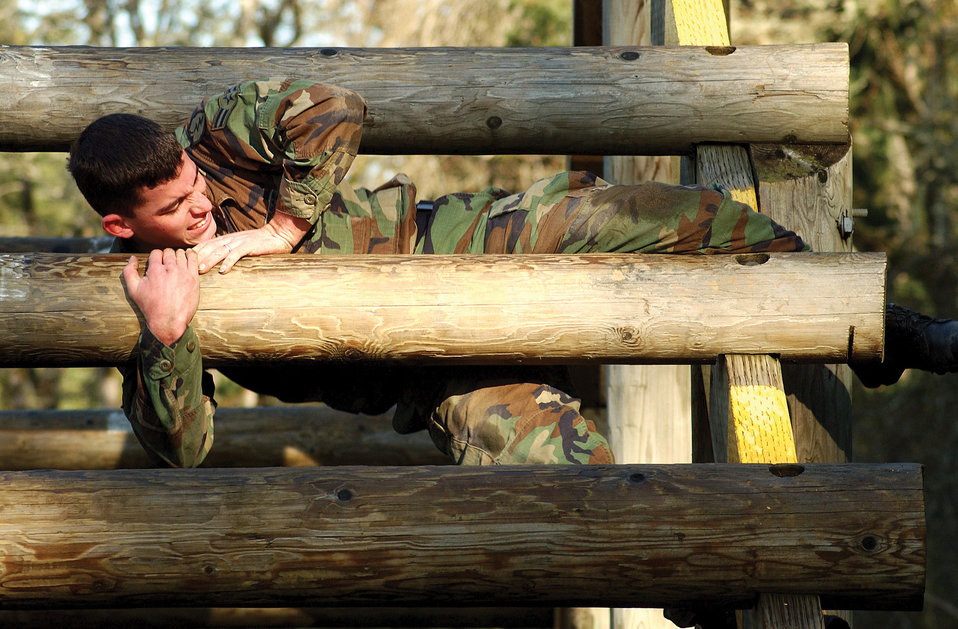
Log jam

MCCHORD AIR BASE, Wash. -- Airman 1st Class Brandon Parker weaves his way in and out of an log obstacle during Cascade Challenge here Feb. 8. Airman Parker is assigned to the 5th Air Support Operations Squadron.